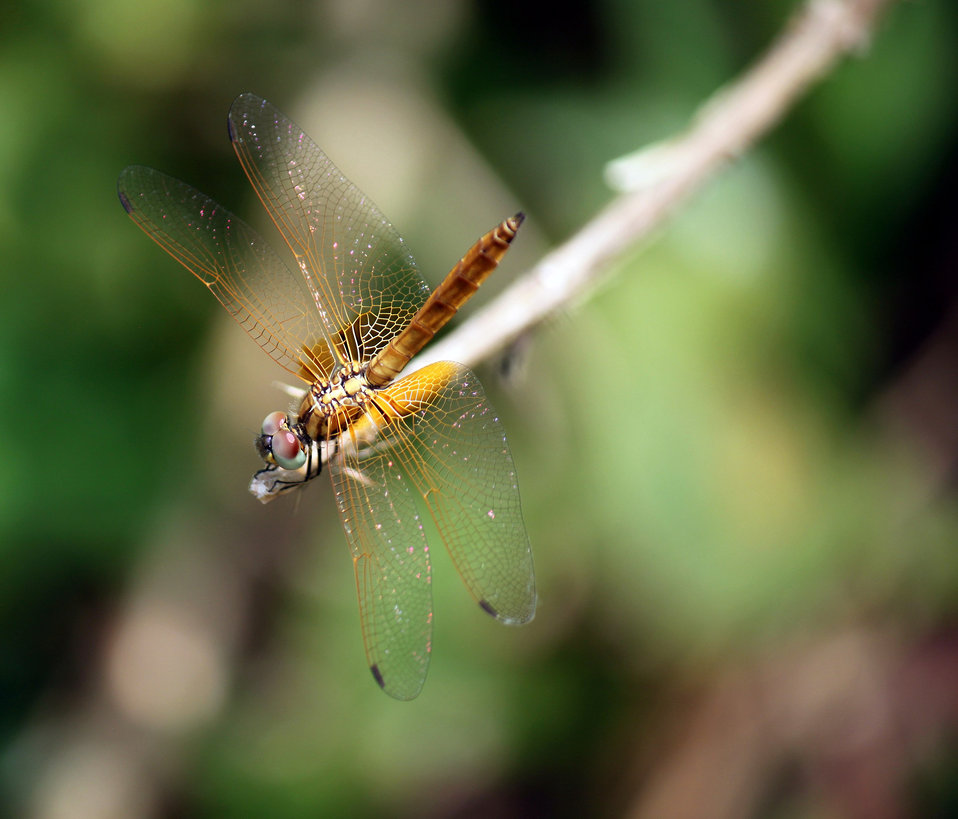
Pink dragonfly staying at stick.